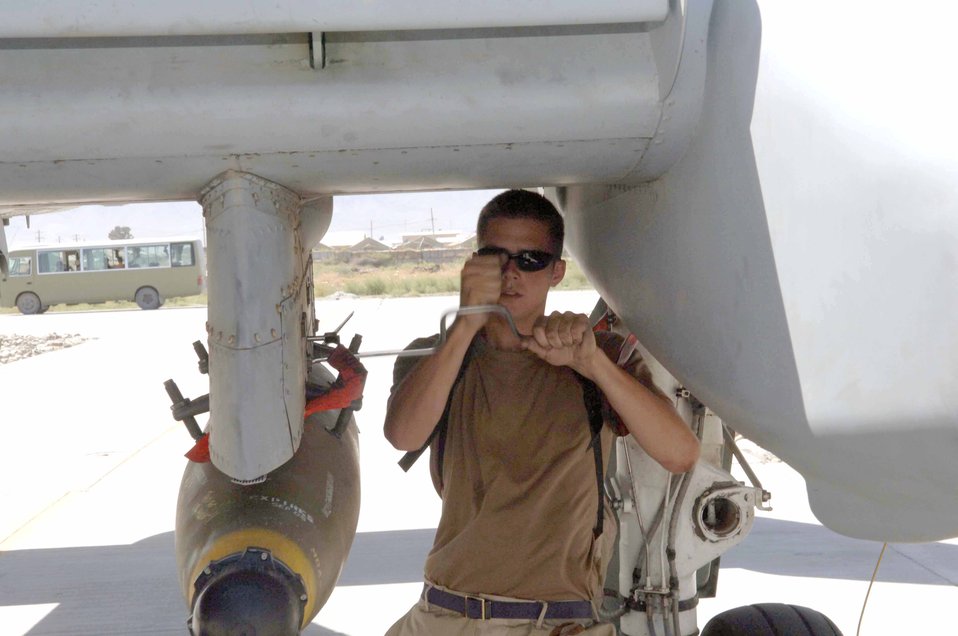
Thunderbolt maintenance

BAGRAM AIR BASE, Afghanistan -- Senior Airman Ver Ringais ensures a bomb is secure on an A-10 Thunderbolt II. He is a weapons loader with the 455th Expeditionary Aircraft Maintenance Squadron here and is deployed from Pope Air Force Base, N.C.